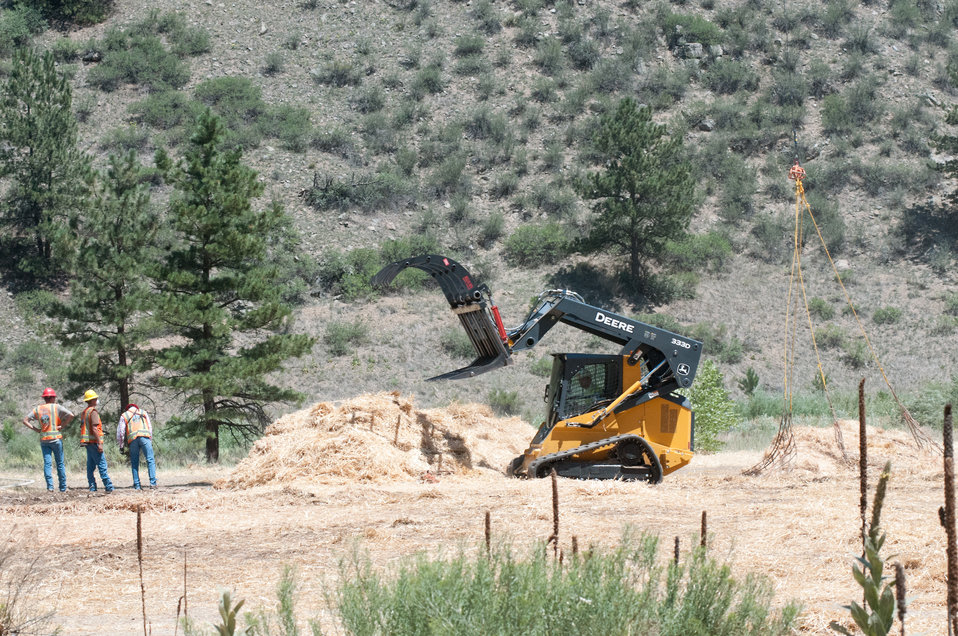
A hydraulic hay fork grapple attachment makes easy work of loosening and adjusting straw bale density and weight for the continuing aerial application of straw to mitigate soil and ash runoff from the mountainous terrain leading to Seaman Reservoir, drinking water resource for the City of Greeley, on Friday, July 20, 2012. Bell UH-1H (2-blade rotor) and A-Star Model B (3-blade rotor) aircraft launched from a landing zone at the foot of the reservoir spillway. The 100-150-food sling lines hold and release loads of certified straw weighing 1,400 – 2,000 pounds. 4-person load crews and heavy equipment operators unloaded 1,000 pound straw bales from tractor trailer rigs, stack them near the pickup point, then bring the bales onto cargo nets, open then loosen and adjust the load on cargo nets for helicopters to lift and drop them onto barren, burned out tributary lands. Forest service lands received straw, while private and other lands receive a seed mix and straw to promote ground cover plant growth on ash-covered lands. In total, 1,800 tons of straw will be applied during the 14-day operation. One quarter of the cost was paid by the City of Greeley and the U.S. Department of Agriculture funded the remainder. The Hewlett Gulch Fire was started by a camper’s alcohol stove, on May 14, at the saddle of a picturesque mountain ridge along the Hewlett Gulch Trail of Poudre Canyon, in the Roosevelt National Forest, 60 miles north of Denver. At it’s more than 400 firefighters were battling fires being pushed by 50 mph winds that helped blacken over 12-square-miles of dry ground cover, brush and trees. Many of the trees were already dead and tinder dry from beetle-kill. The water in the reservoir remains clean and clear, while downstream water flow has gone from famous Colorado clear water to nearly black flows of water heavily laden with ash, silt, and burnt debris that recent thunderstorms have already washed down from the mountainsides.